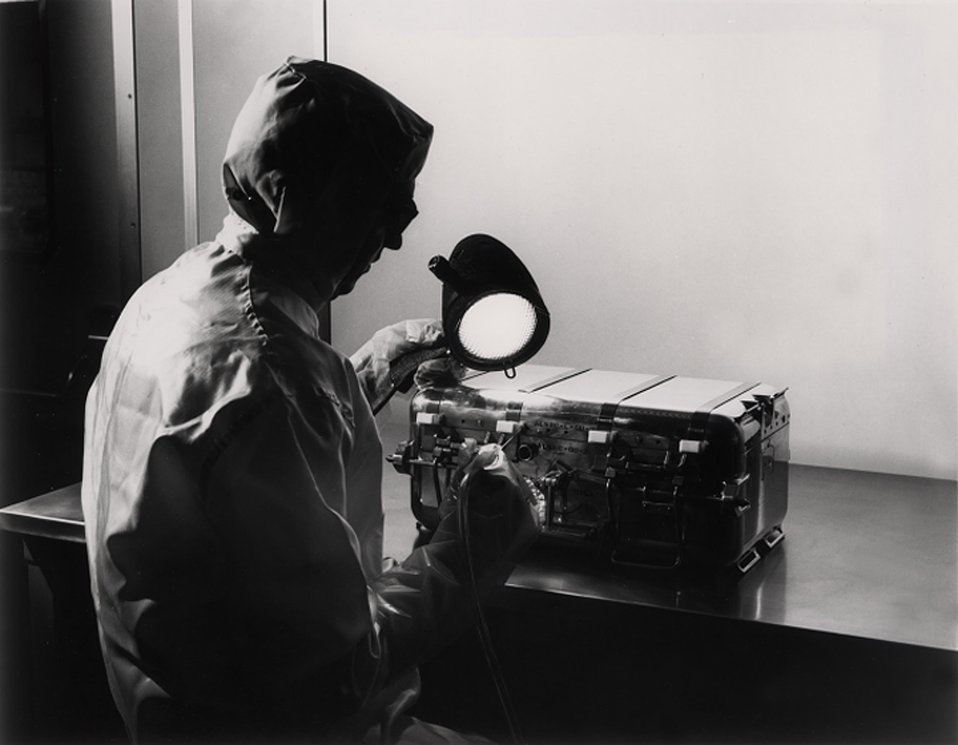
A fluorescent light and a needle sized vacuum cleaner are used to remove lint particles from the Apollo moonbox.